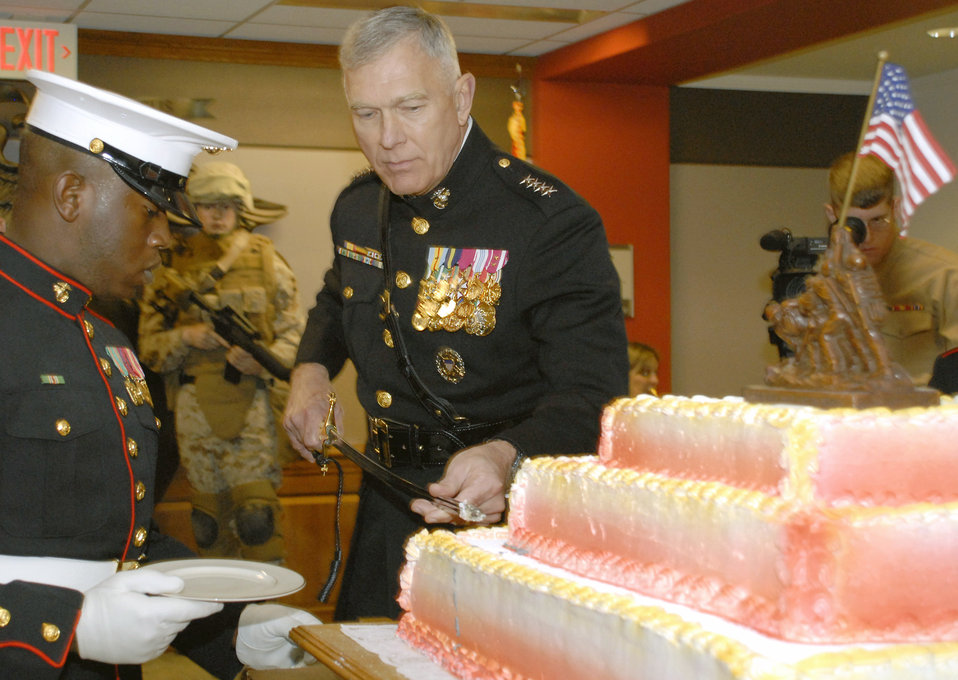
Happy birthday, U.S. Marine Corps

Gen. James T. Conway, commandant of the Marine Corps, uses a traditional saber to cut the Marine Corps birthday cake. The Corps celebrates its 233rd birthday with a celebration Nov. 7 in the newly-opened Marine Corps Corridor in the Pentagon. Guests included more than 100 Marines, Sailors, civilians and other members of the joint staff as well as and Secretary of the Navy Donald C. Winter. The Marine Corps was founded on Nov. 10, 1775.